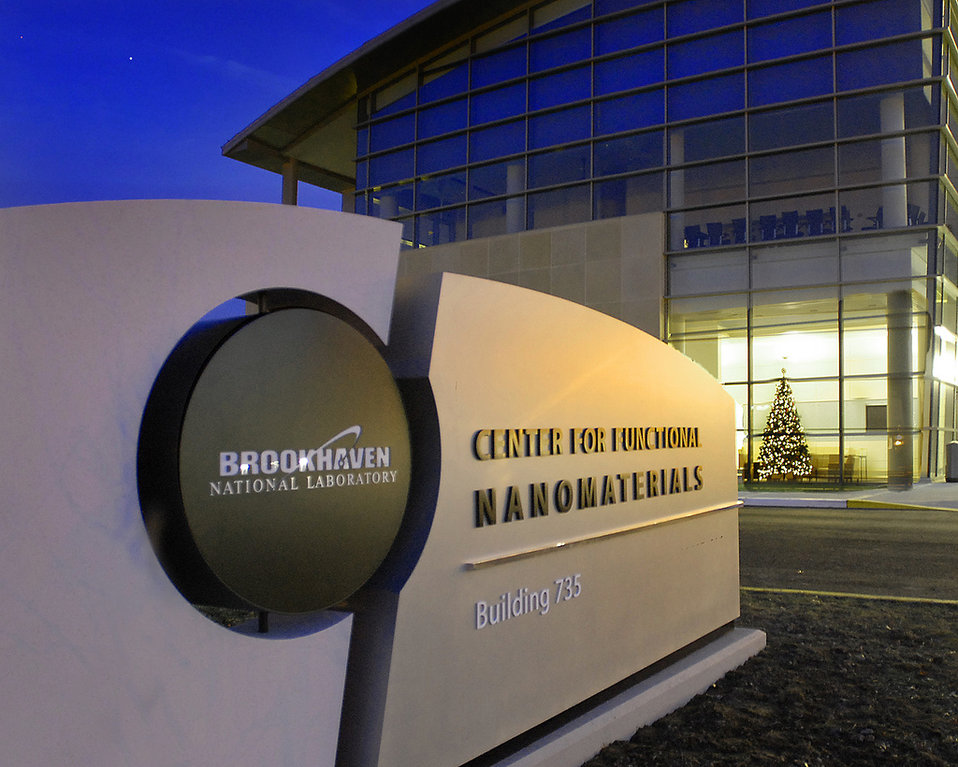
Center for Functional Nanomaterials building at Brookhaven National Laboratory.
The CFN at Brookhaven provides state-of-the-art capabilities for the fabrication and study of nanoscale materials, with an emphasis on atomic-level tailoring to achieve desired properties and functions.